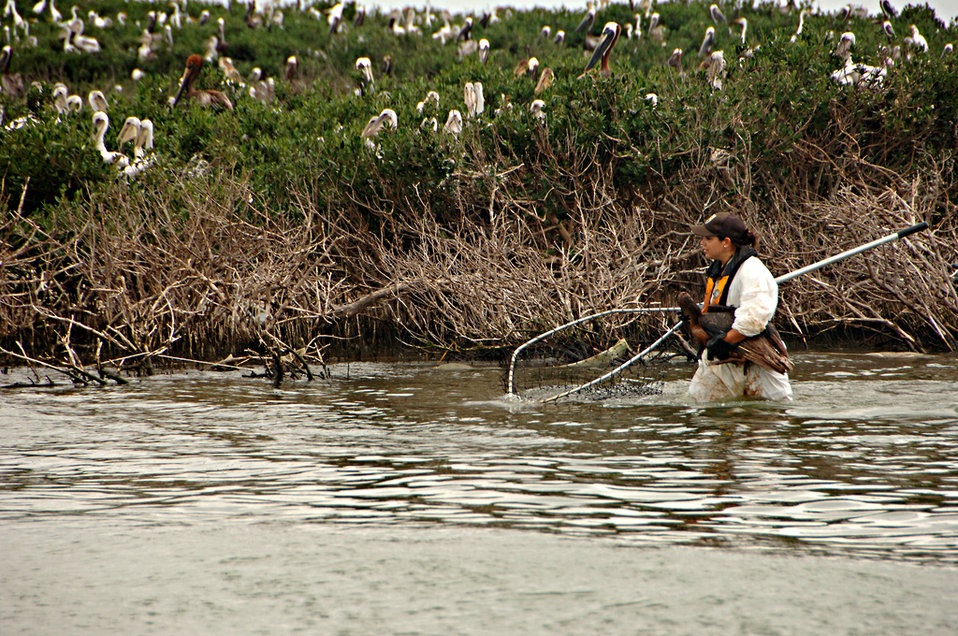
near Mandalay National Wildlife Refuge, LA

USFWS employee Kayla DiBenedetto carries an oiled pelican she netted on June 5, 2010, part of a massive wildlife rescue effort in the wake of the Deepwater Horizon oil spill in the Gulf of Mexico.
Photo: Petty Officer 2nd Class John D. Miller, US Coast Gyard